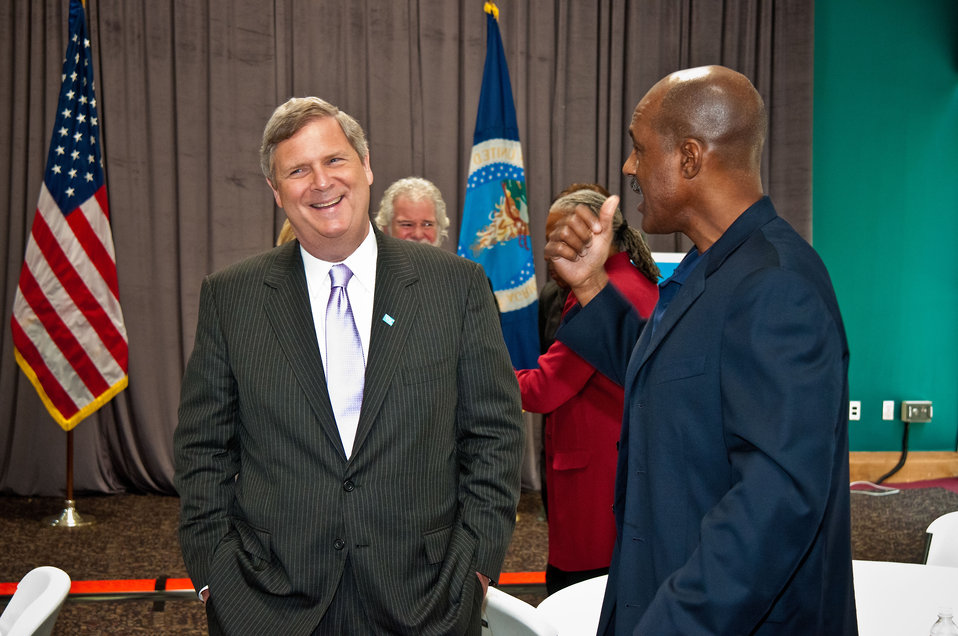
Agriculture Secretary Tom Vilsack met with Art Monk, Washington Redskins National Football League Hall of Famer prior to the United States Department of Agriculture’s 150th Anniversary celebration in Washington, D.C., on Tuesday, May 15, 2012. Monk and La Var Arrington, Washington Redskins, three time Pro-Bowler discussed and participated in the Fuel Up to Play 60 demonstration an in-school nutrition and physical activity program launched by the National Dairy Council and the National Football League, in collaboration with USDA, to combat childhood obesity.